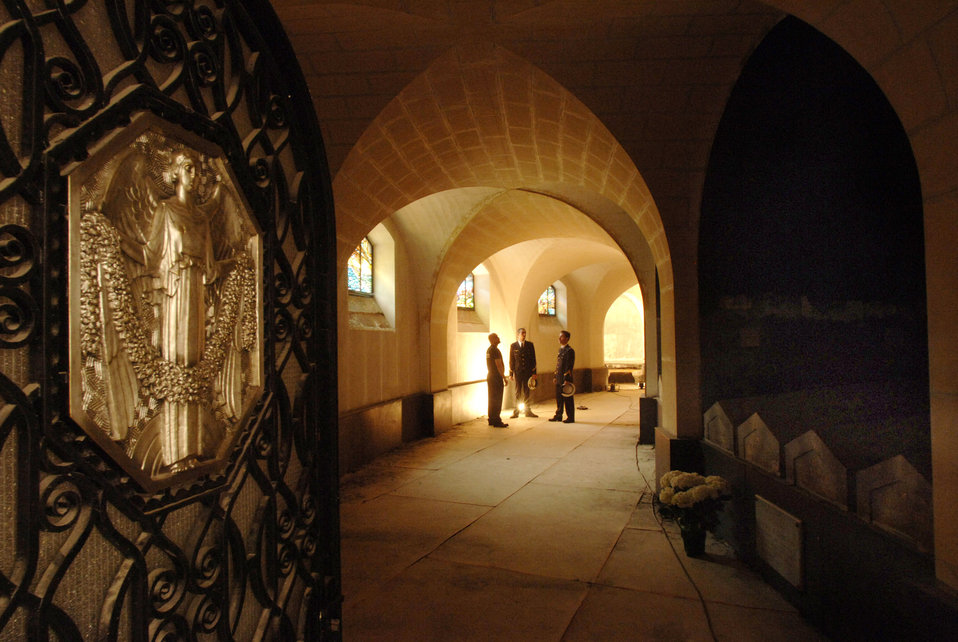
Early aviators memorialized

Visitors to the Lafayette Memorial outside Paris tour the memorial crypt where the remains of some of the United States' first combat aviators are preserved. Known as the Lafayette Escadrille, the all-American squadron of volunteers flew under the French flag during World War I where many gave their lives in defense of French democracy.